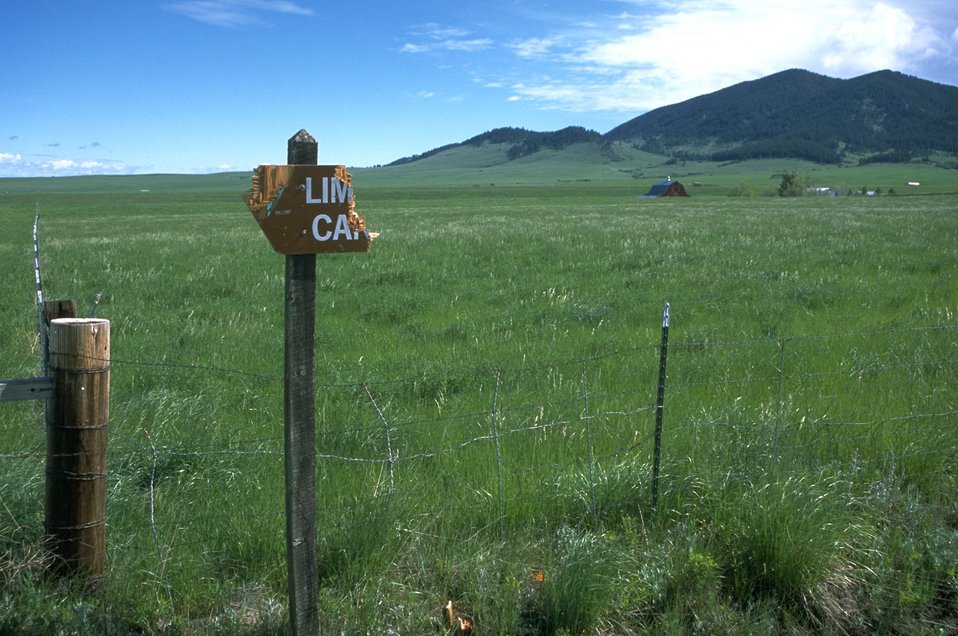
BLM sign destroyed by vandals in the LimeKiln Canyon area